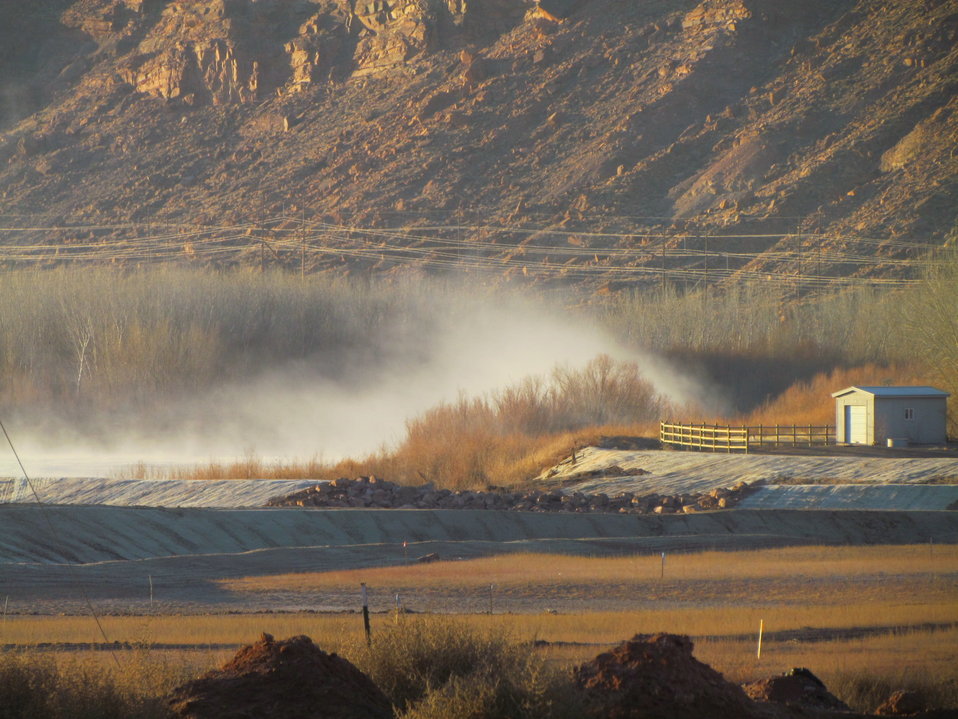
Moab sunlight

Early morning sunlight highlights the mist coming off the Colorado River near the well field at the Moab, Utah, site.